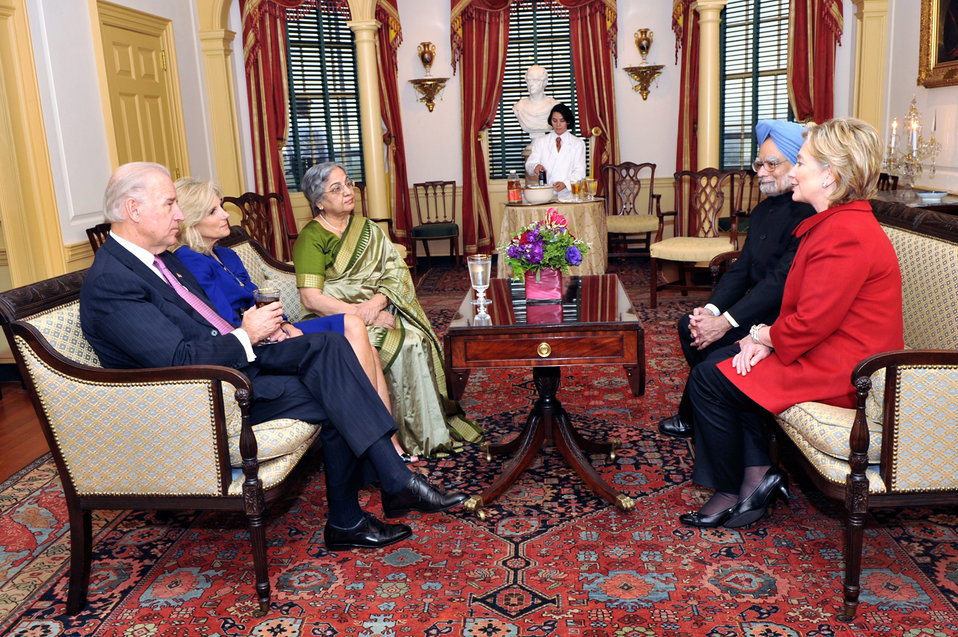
Vice-President Biden, Secretary Clinton Co-Host Social Lunch in Honor of Indian Prime Minister

U.S. Vice-President Joe Biden Dr. Jill Biden co-host a social lunch with U.S. Secretary of State Hillary Rodham Clinton in honor of Indian Prime Minister H.E. Dr. Manmohan Singh and Dr. Gurusharan Kaur at the U.S. Department of State in Washington, DC November 24, 2009.